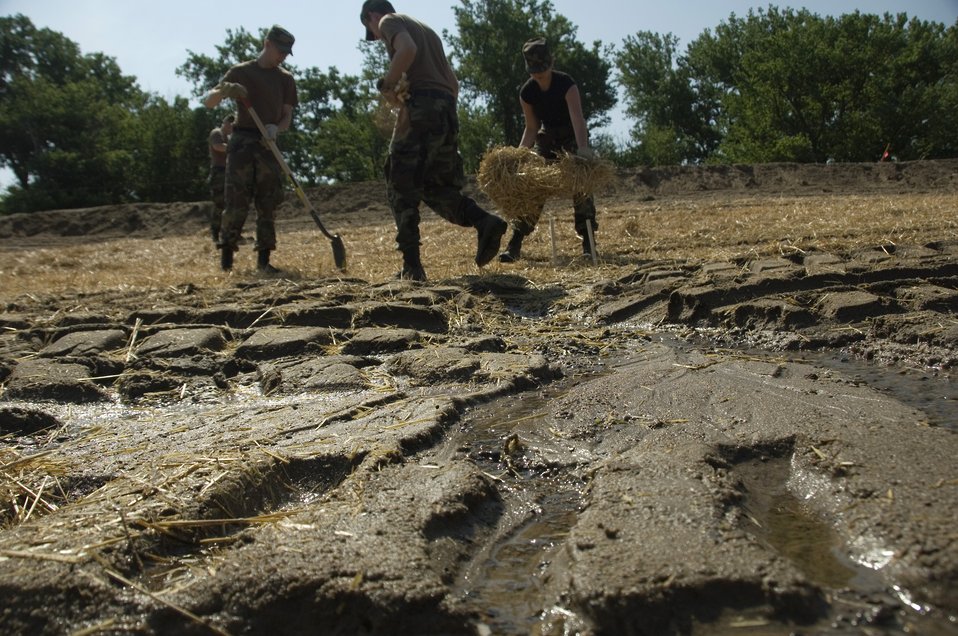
Air Guard prevents erosion

Members of the Iowa Air National Guard use a mixture of sand and hay to prevent levee erosion along the Mississippi River June 18 near Burlington, Iowa. The members of the 185th Air Refueling Wing at Sioux City, Iowa, are helping to protect approximately 14,000 acres of farmland from erosion.